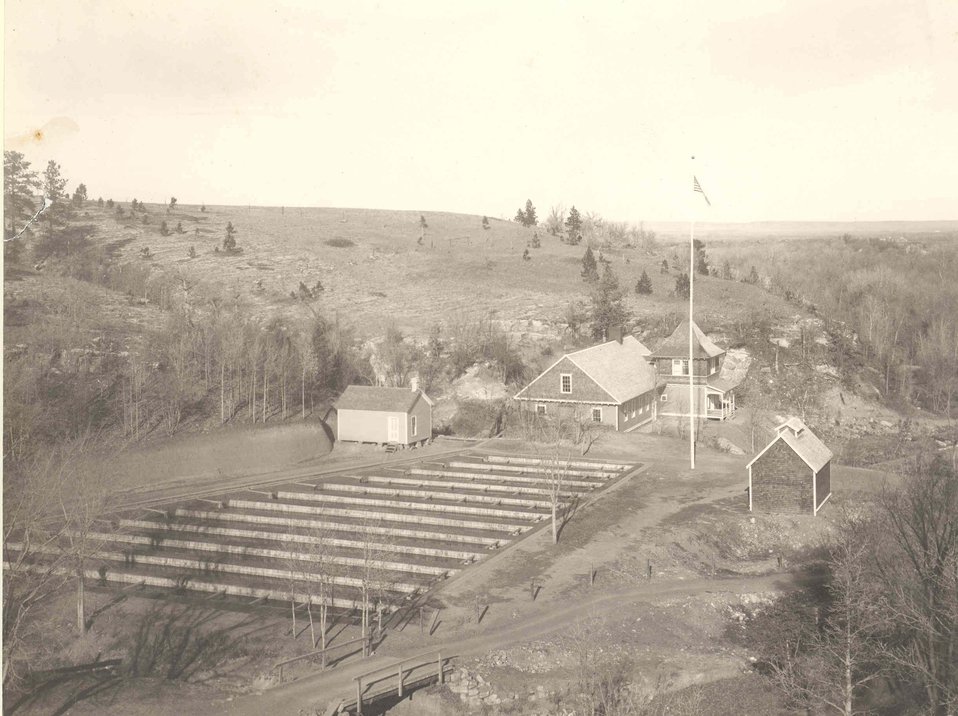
D.C. Booth Historic National Fish Hatchery

View of D.C. Booth hatchery building and raceways in 1899, also called the Spearfish Station at that time.